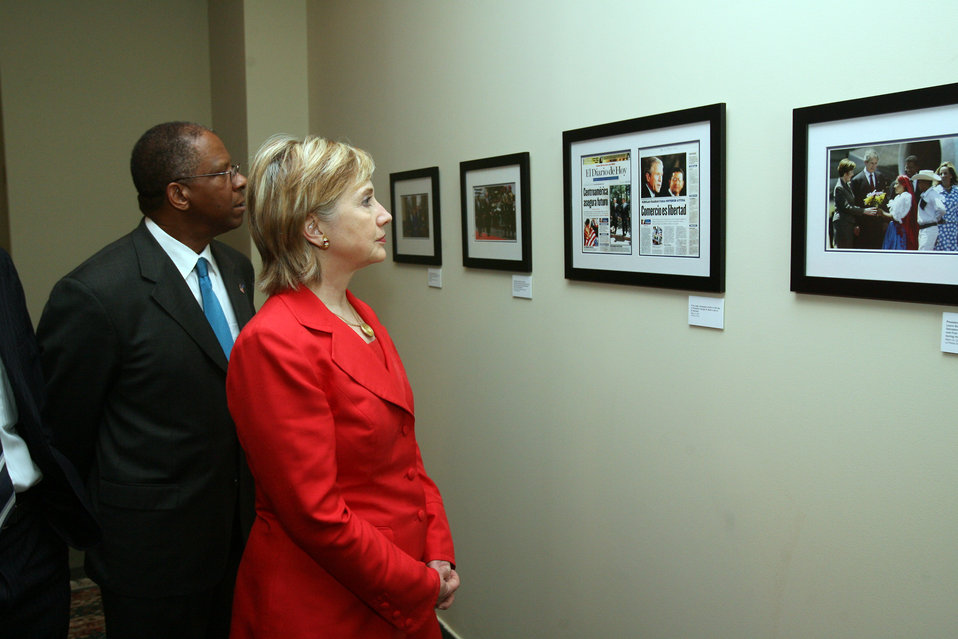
Photo Exhibit: “The United States and El Salvador, An Enduring Relationship'

U.S. Secretary of State Hillary Rodham Clinton observes some historical pictures displayed at the U.S. Embassy San Salvador photo exhibition entitled “The United States and El Salvador, An Enduring Relationship” in San Salvador, El Salvador June 1,2009. The exhibit shows more than 30 photos dating from 1928 to date of different visits of US leaders to El Salvador.